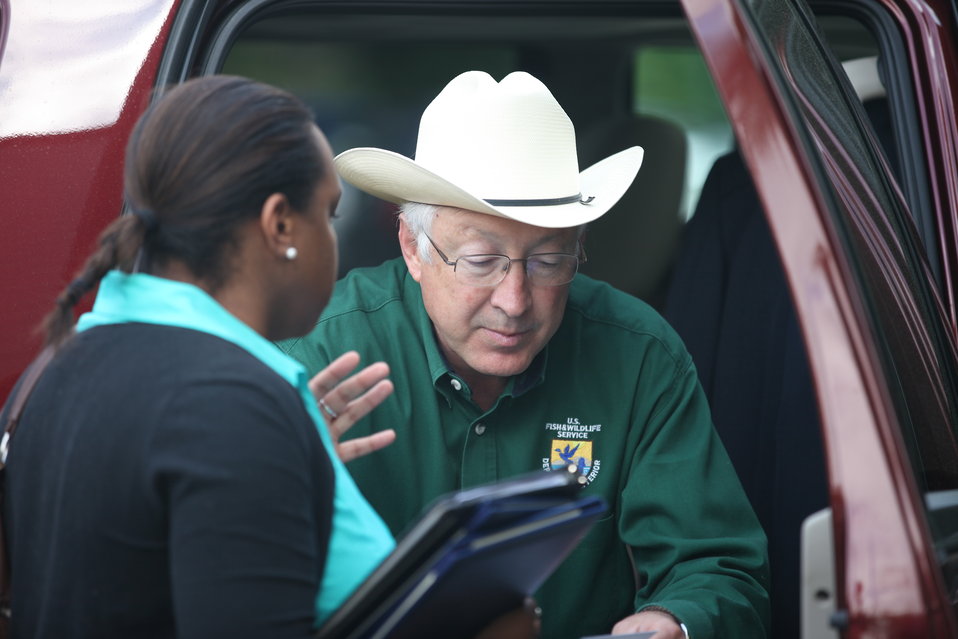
Sec. of Interior Ken Salazar arrives in Hartford, CT.

Secretary Ken Salazar arrives onsite to meet with stakeholders and sign the Blueway designation for the Connecticut River in Hartford, Connecticut.